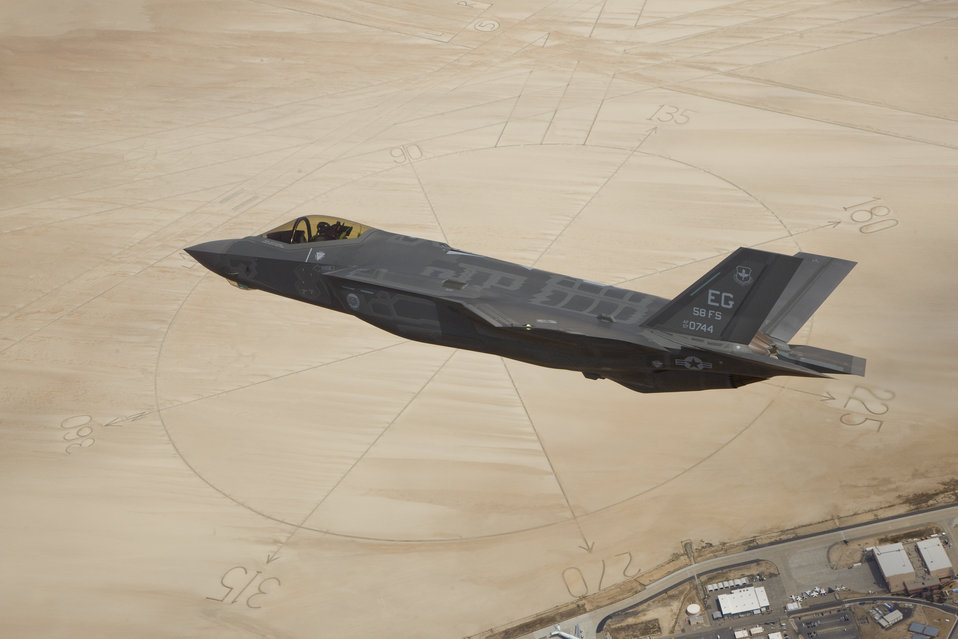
Second production F-35 arrives at Edwards Air Force Base, Calif.,

The second production model F-35A Lightning II aircraft flies above the compass rose of Rogers Dry Lakebed at Edwards Air Force Base, Calif., May 13, 2011. The aircraft, designated AF-6, ferried to Edwards AFB from Naval Air Station Fort Worth Joint Reserve Base, Texas, following the Air Force formally accepting the fighter into its inventory the day before. The first production jet, AF-7, was delivered to Edwards May 6, making six total F-35 aircraft in the test program on base.